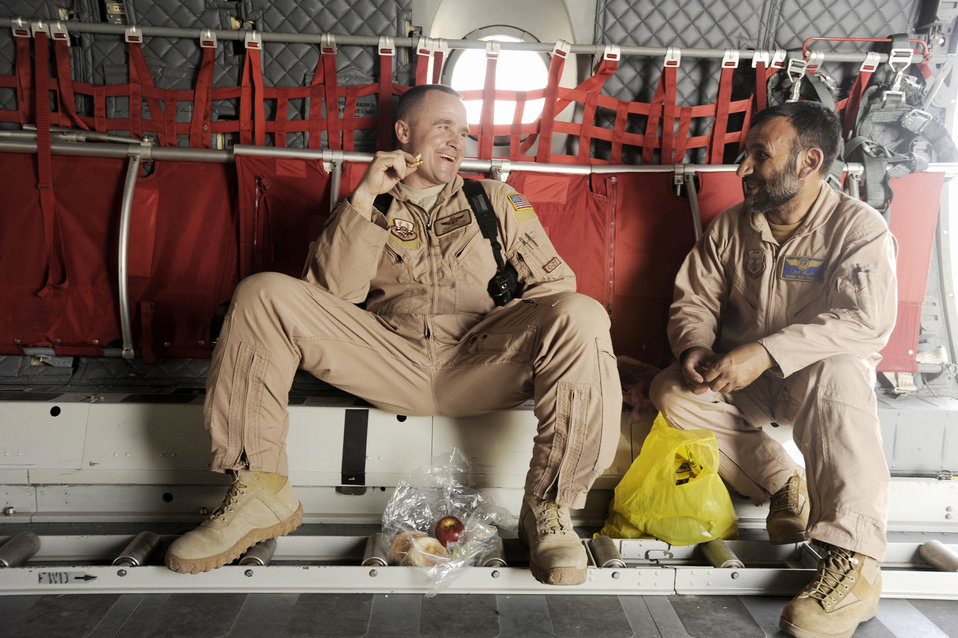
Airmen train Afghan C-27 loadmaster

Master Sgt. Chris Ringland and Afghanistan National Army Air Corps Master Sgt. Sheer Aqa Karimi socialize during a chow break March 28, 2010, at Camp Bastion, Afghanistan. Sergeant Karimi is a C-27 Spartan loadmaster, and Sergeant Ringland is a 438th Air Expeditionary Advisory Group standards and evaluation loadmaster.